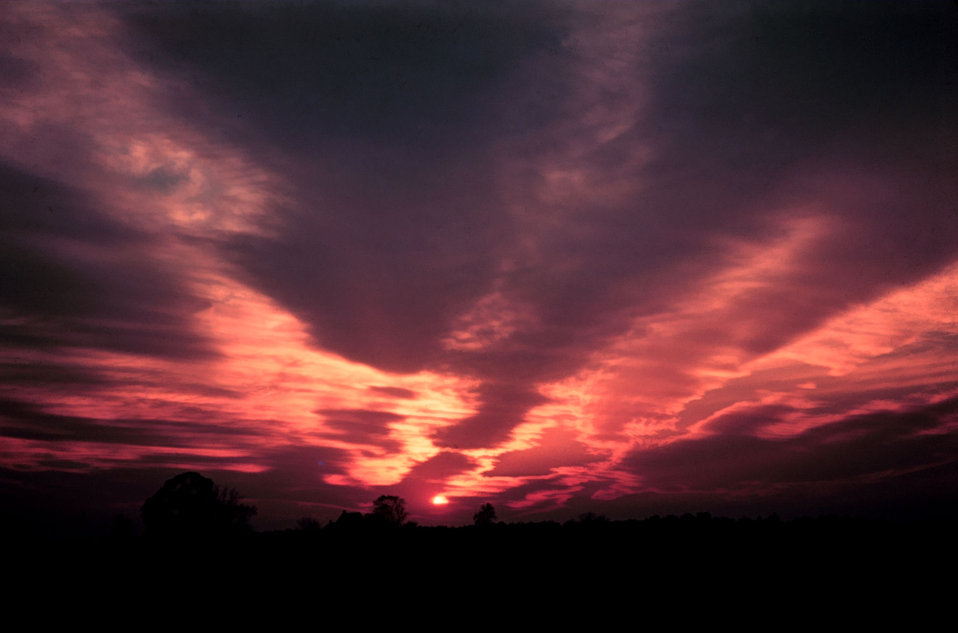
A setting sun